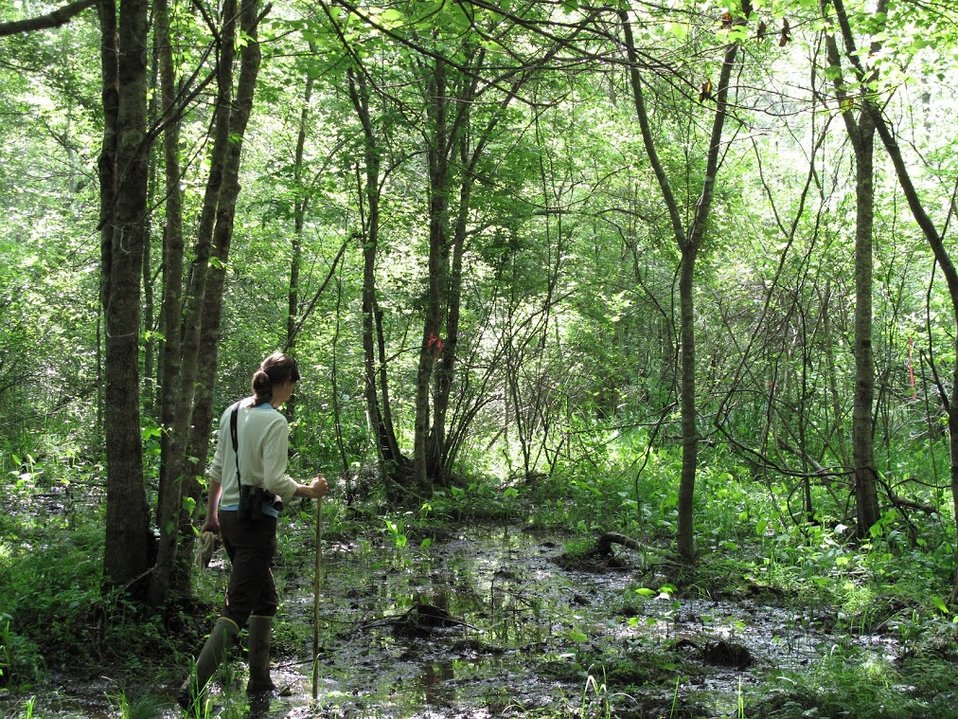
Bog turtle

Scientific name: Clemmys muhlenbergii
Status: Threatened and similarity of appearance

Service biologist Sue Cameron